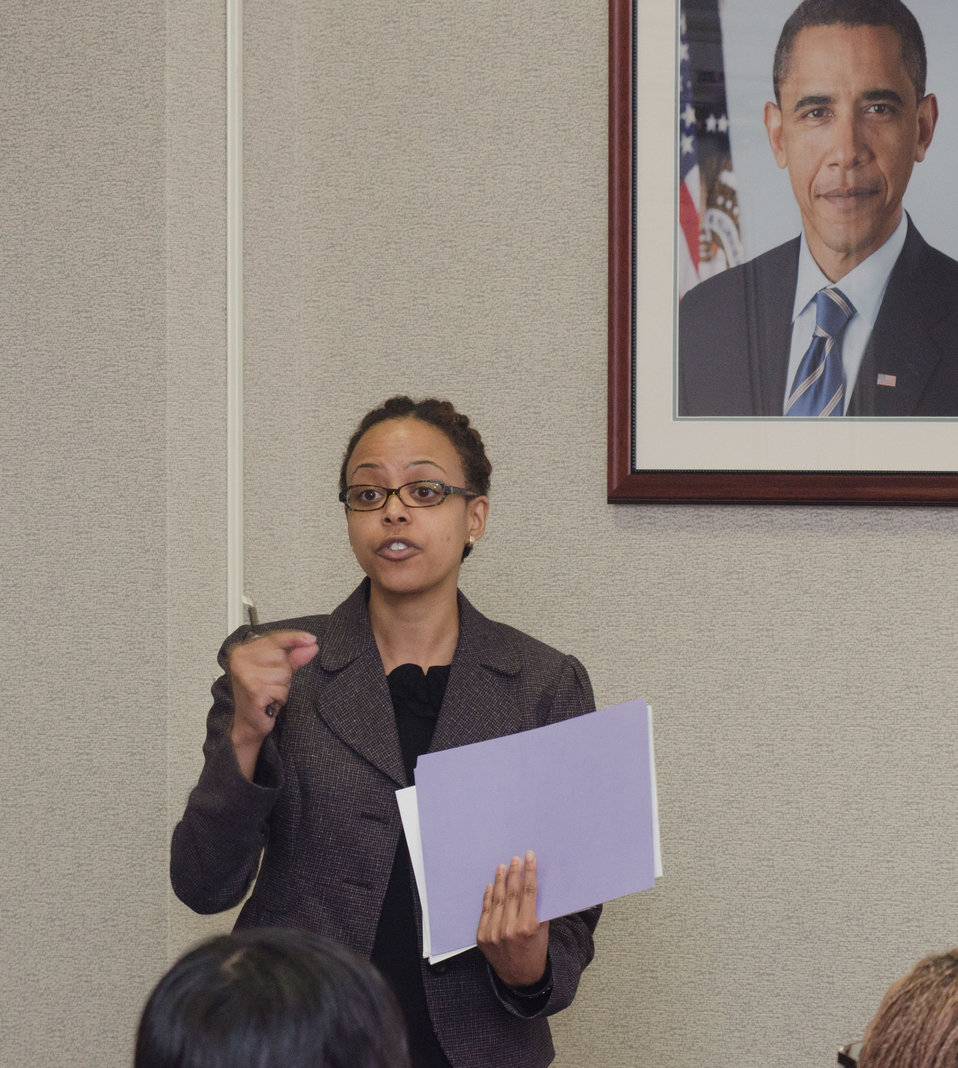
Department of State’s Global Health Initiative Liaison Officer Tsehaynesh Abebe comments to National CARES Mentoring Movement founder and Editor-in-Chief Emeritus, Essence magazine, Susan Taylor, about USAID and other State opportunities that have possible benefit to the organization, while Taylor was attending meeting at the Department of Agriculture and the Department of Energy for a cross-departmental discussion, in Washington, D.C., on Tuesday, February 28, 2012. This not-for-profit organization is dedicated to recruiting and connecting mentors with local youth-serving and mentoring organizations to help guide under-resourced children to academic and social success across the country.
This discussion provides a continuation of the White House Policy in Action conference that took place in November. The focus of the discussion was about how existing federal programs and Administration priorities can be leveraged with her organization, especially as it relates to science, technology, engineering and mathematics (STEM) literacy, education and rural youth.